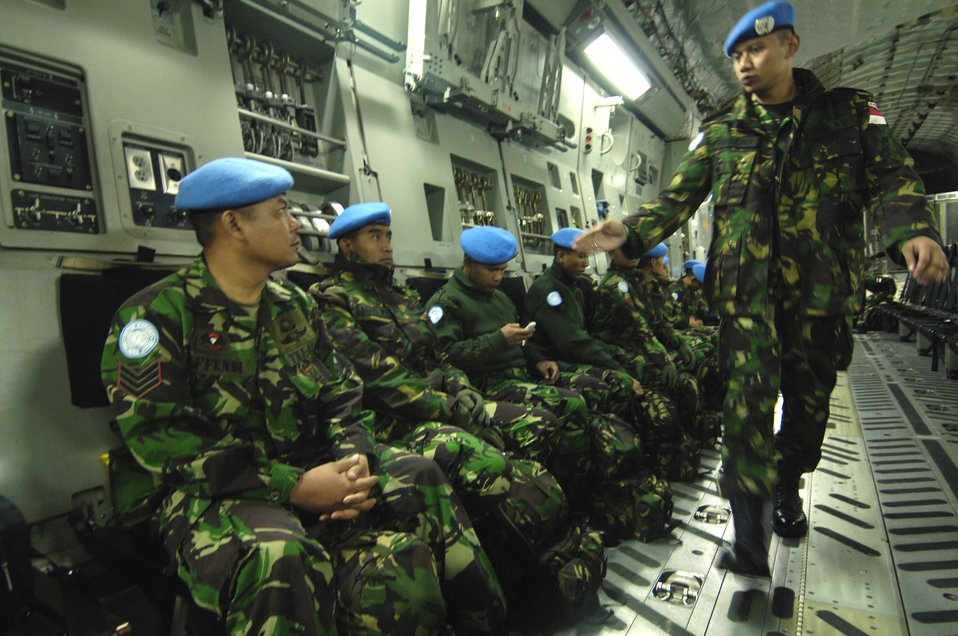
Moving the peacekeepers

Indonesian peacekeeping troops get situated onboard a C-17 Globemaster III Nov.8 prior to takeoff. They are deploying to Lebanon in support of UNIFIL, the United Nation's Interim Force in Lebanon.